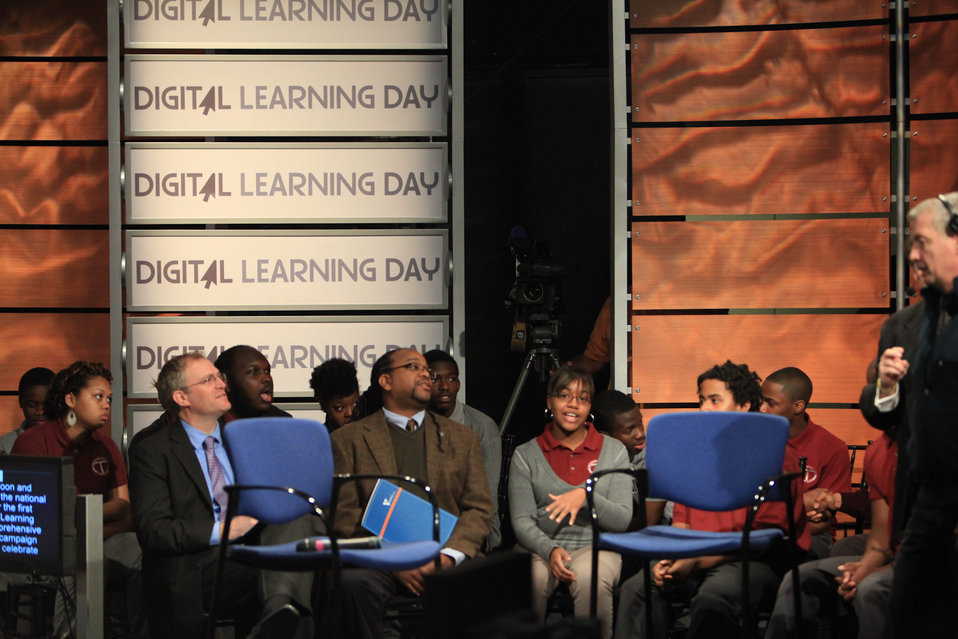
Students from McKinley Technology High School attends Digital Learning Day Town Hall in Washington, DC, on February 1, 2012.